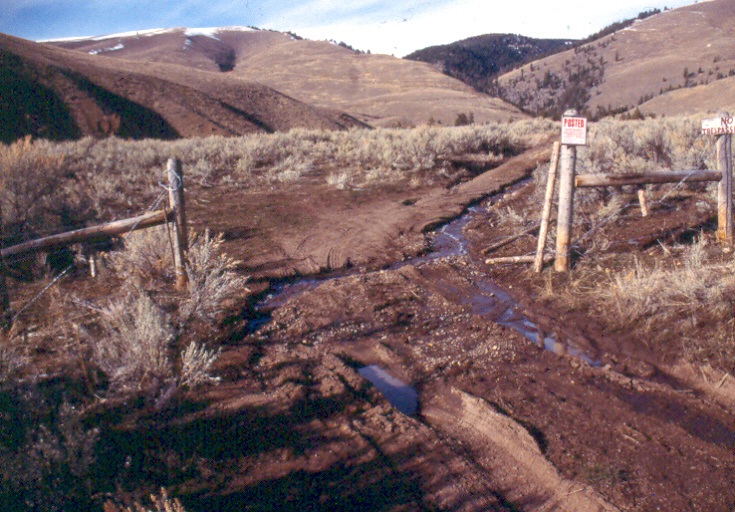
Roads Recreation Erosion Salmon Field Office UCSC Upper Columbia Salmon Clearwater District